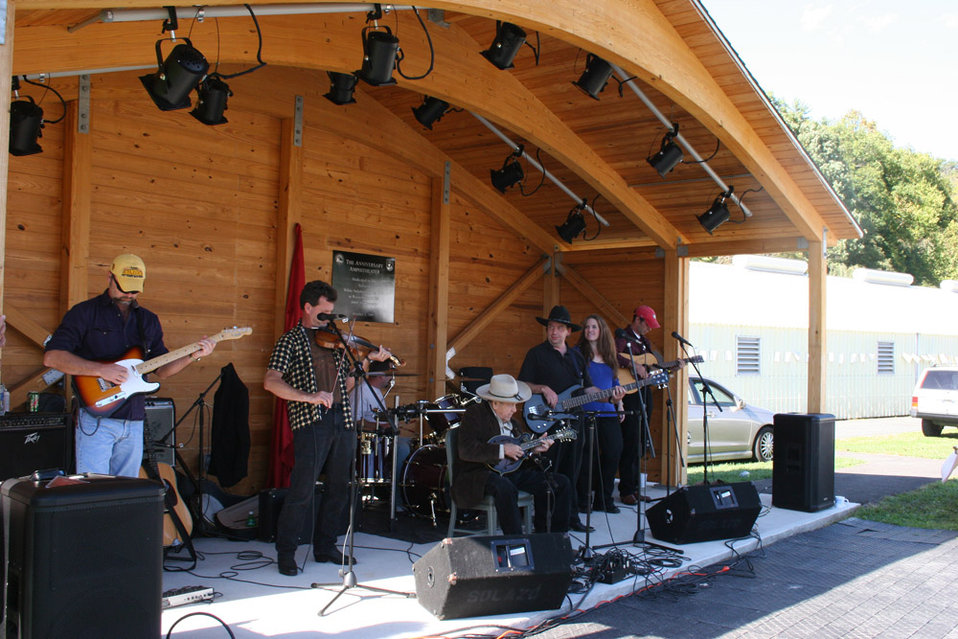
Freshwater Folk Festival

The 5th Annual Freshwater Folk Festival at White Sulphur Springs National Fish Hatchery in West Virginia.Credit: USFWS